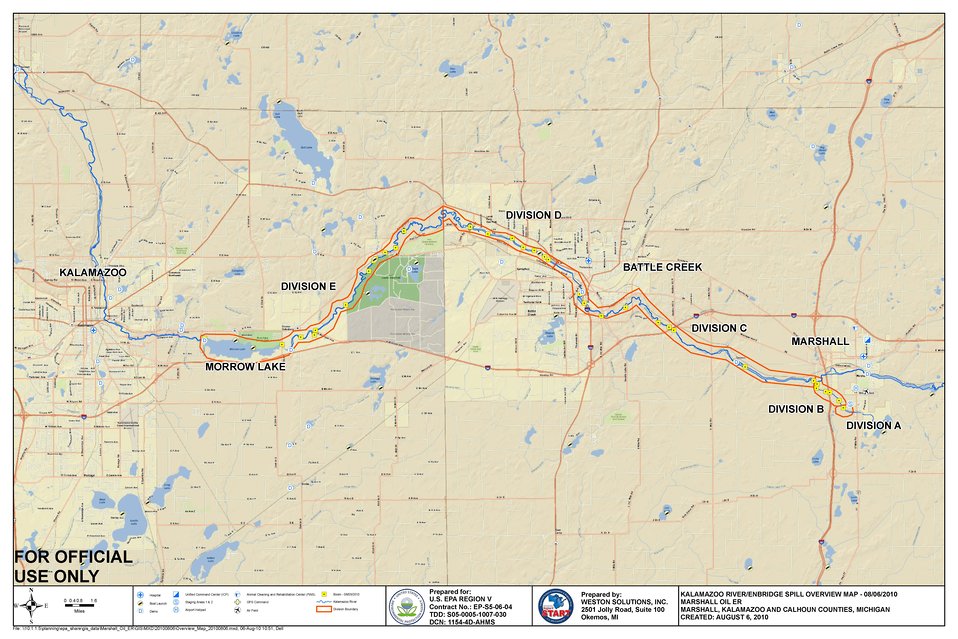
Overview map of the affected areas of Talmadge Creek, Kalamazoo River and Morrow Lake.